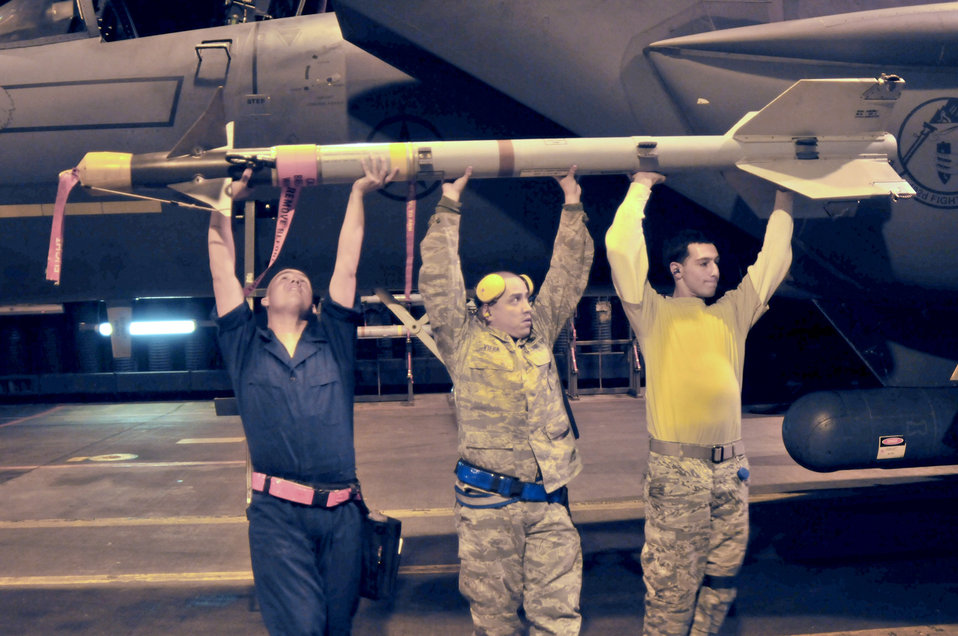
Lakenheath set-piece demonstration

Tech. Sgt. Salvador Bravo, Staff Sgt. Jorge Viera and Senior Airman Alex Ponzi load an AIM-9 missile onto an F-15E Strike Eagle during a set-piece demonstration Oct. 7, 2010, at Royal Air Force Lakenheath, England. A five-man team inspected, refueled and rearmed the aircraft to practice for the upcoming NATO Tactical Evaluation. Sergeants Bravo and Viera and Airman Ponzi are members of the 48th Maintenance Group.